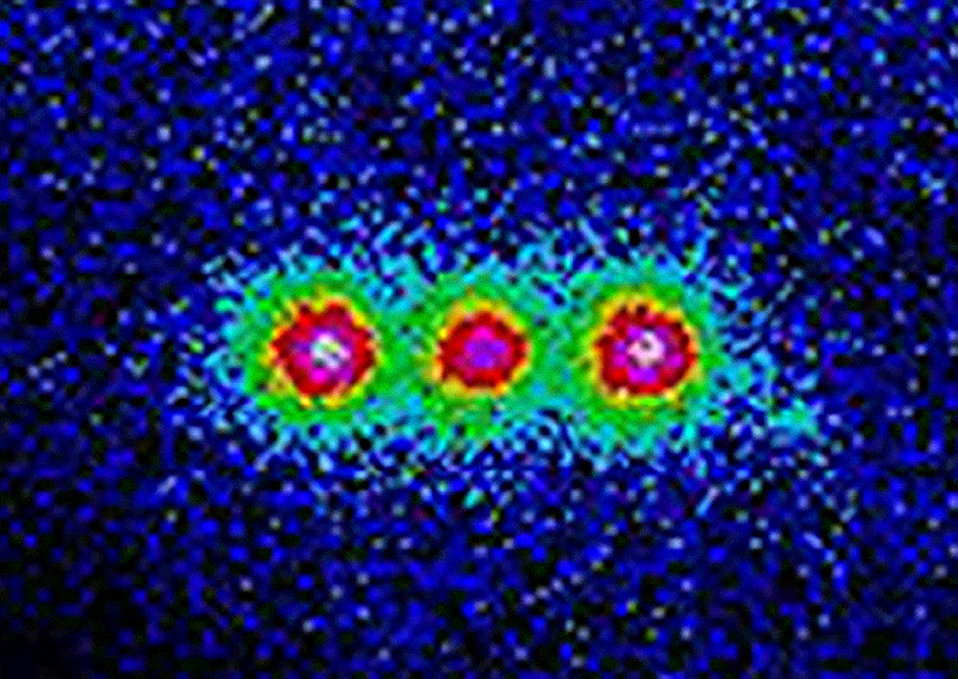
Fourier Transform, Beryllium Ions

This colorized image shows the fluorescence from three trapped beryllium ions illuminated with an ultraviolet laser beam. Black and blue areas indicate lower intensity, and red and white higher intensity.
NIST physicists used three beryllium ions to demonstrate a crucial step in a procedure that could enable future quantum computers to break today's most commonly used encryption codes.